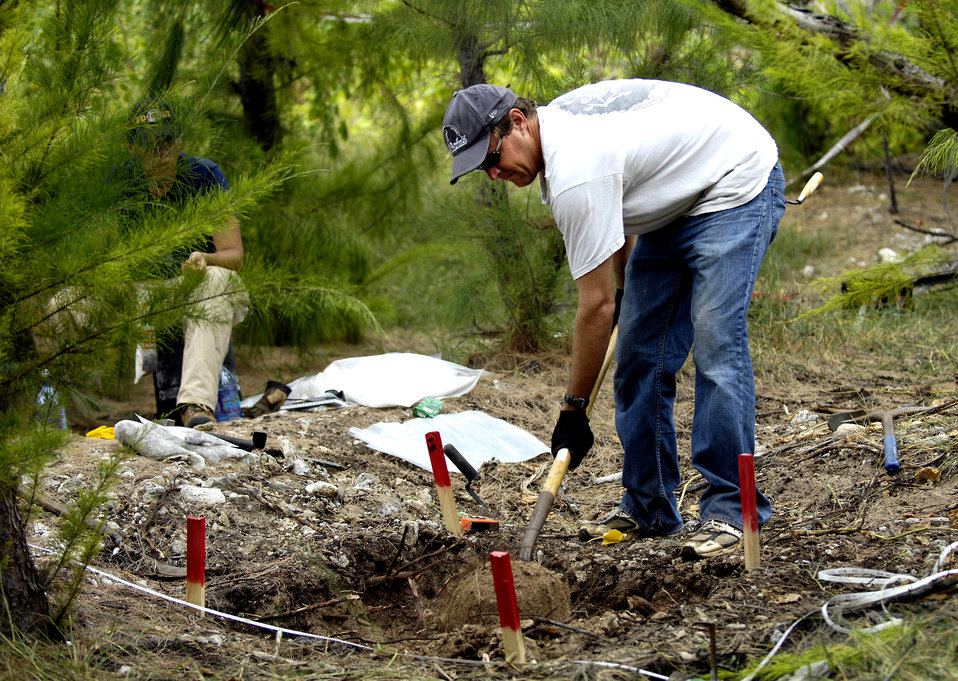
Servicemembers search for POW/MIAs on Wake Island

Greg Berg excavates a dig site Jan. 12 on Wake Island. Mr. Berg, a forensic anthropologist, was sent to do a site survey after Wake Island officials notified the Joint POW/MIA Accounting Command of bones located on the island. JPAC officials are charged with achieving the fullest possible accounting of all Americans missing as a result of past conflicts.